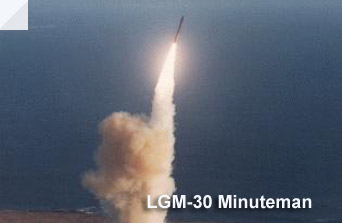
LGM-30 Minuteman

The LGM-30G Minuteman intercontinental ballistic missile, or ICBM, is an element of the nation's strategic deterrent forces under the control of the Air Force Global Strike Command.